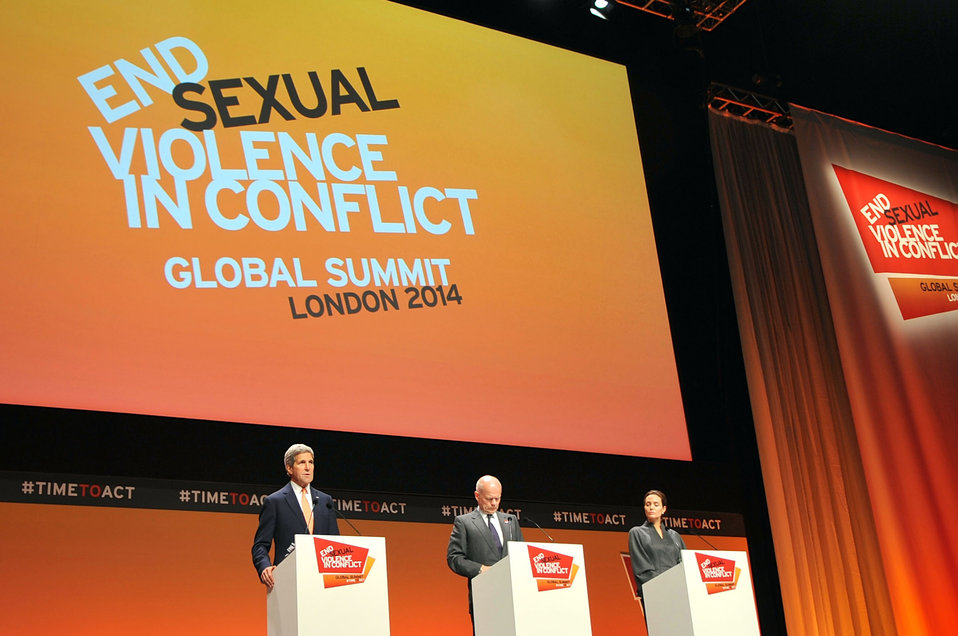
Secretary Kerry Speaks During Sexual Violence News Conference With Secretary Hague, Actress Jolie

U.S. Secretary of State John Kerry addresses reporters during news conference with British Foreign Secretary William Hague and actress and UN Envoy Angelina Jolie at the conclusion of the 2014 Global Summit to End Sexual Violence in Conflict in London on June 13, 2014.